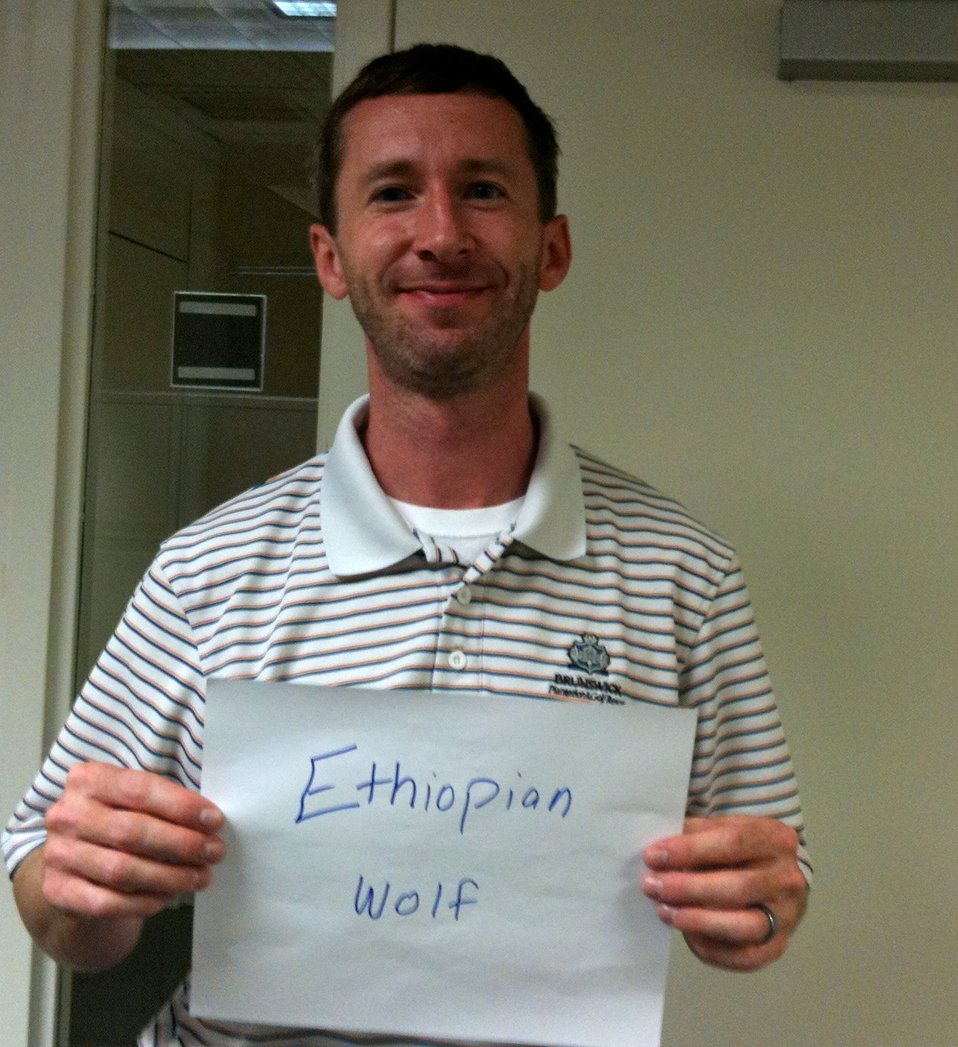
Jeff Parker, 'Ethiopian Wolf,'

International Affairs participates in FFI's In Our Hands campaign